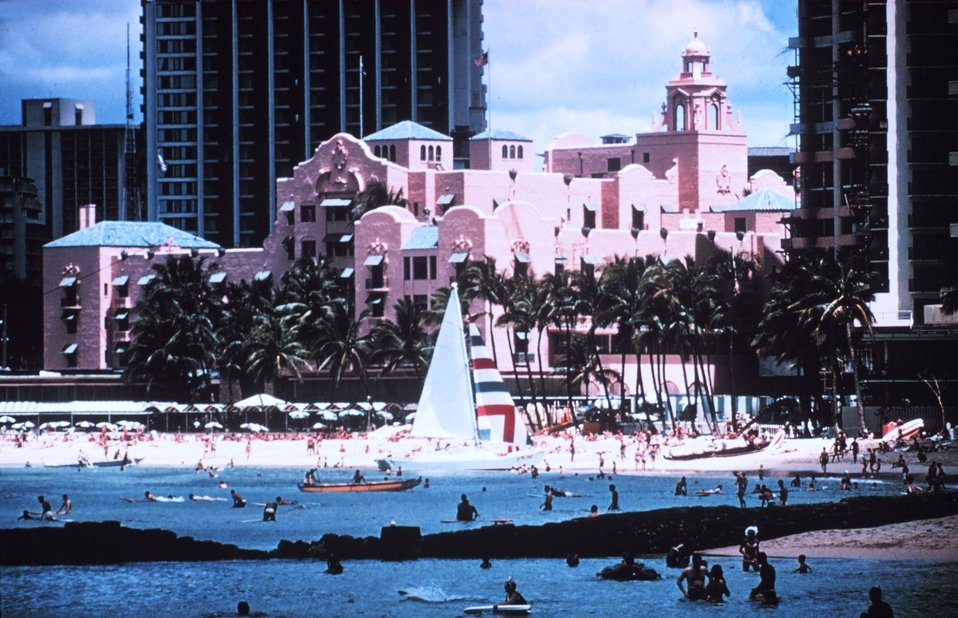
Waikiki Beach